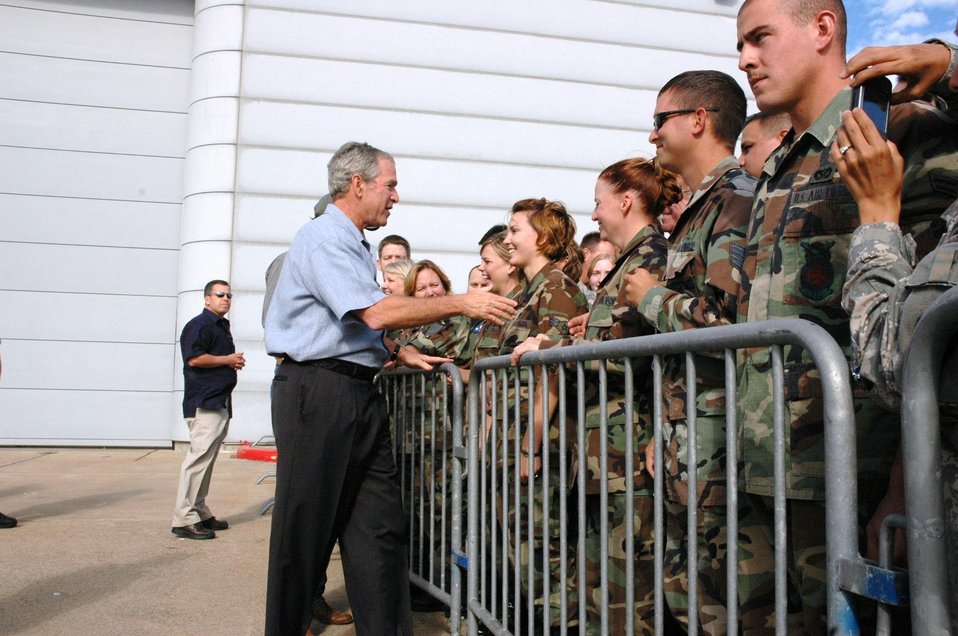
President Bush greets servicemembers supporting Ike relief

President George W. Bush shakes hands with military members Sept. 16 at Ellington Field, Texas, before assessing the damage from Hurricane Ike from the Marine 1 helicopter around the Gulf Coast. Active duty, Reserve and Guard servicemembers are assisting with the relief effort after the storm ravaged the region.